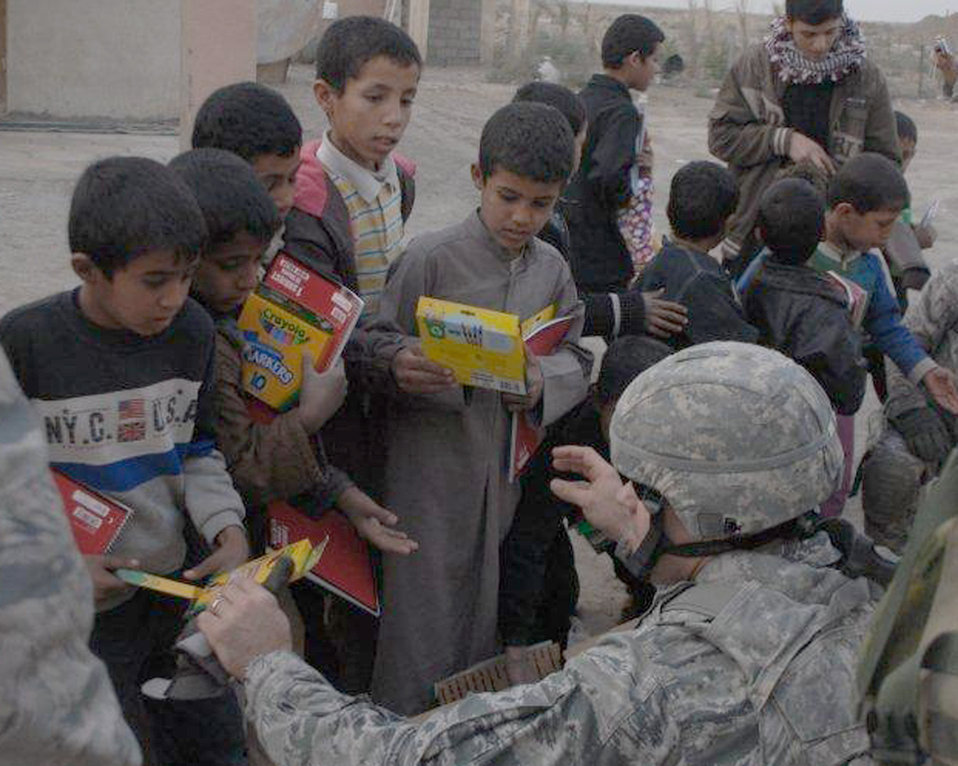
Service members give gifts to children

Master Sgt. Brent Baker hands markers and crayons to Iraqi children Dec. 16, 2010, at Ur Elementary School near Tallil Air Base, Iraq. Sergeant Baker is an Echelon Above Division-Advise and Train munitions adviser.